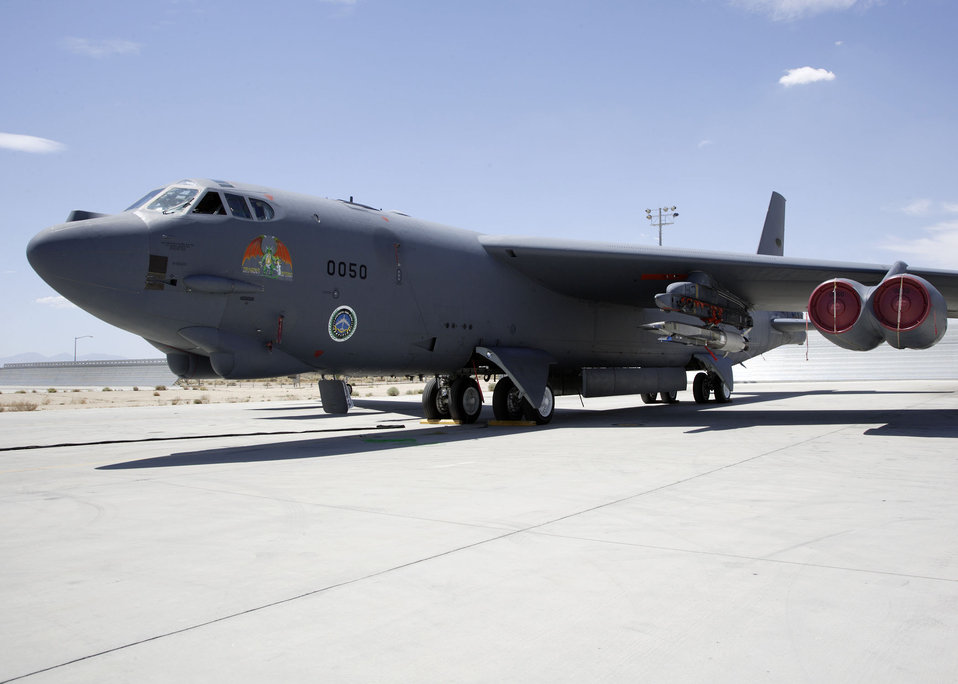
Waverider meets Stratofortress

The X-51A WaveRider hypersonic flight test vehicle was uploaded to an Air Force Flight Test Center B-52 Stratofortress at Edwards Air Force Base, Calif., July 17 for fit testing. Two B-52 test flights are planned this fall prior to the X-51's first hypersonic scramjet flight over the Pacific Ocean scheduled in December. Representatives from the Air Force Research Laboratory, DARPA, Pratt & Whitney Rocketdyne and Boeing are partnering on the X-51A technology demonstrator program.